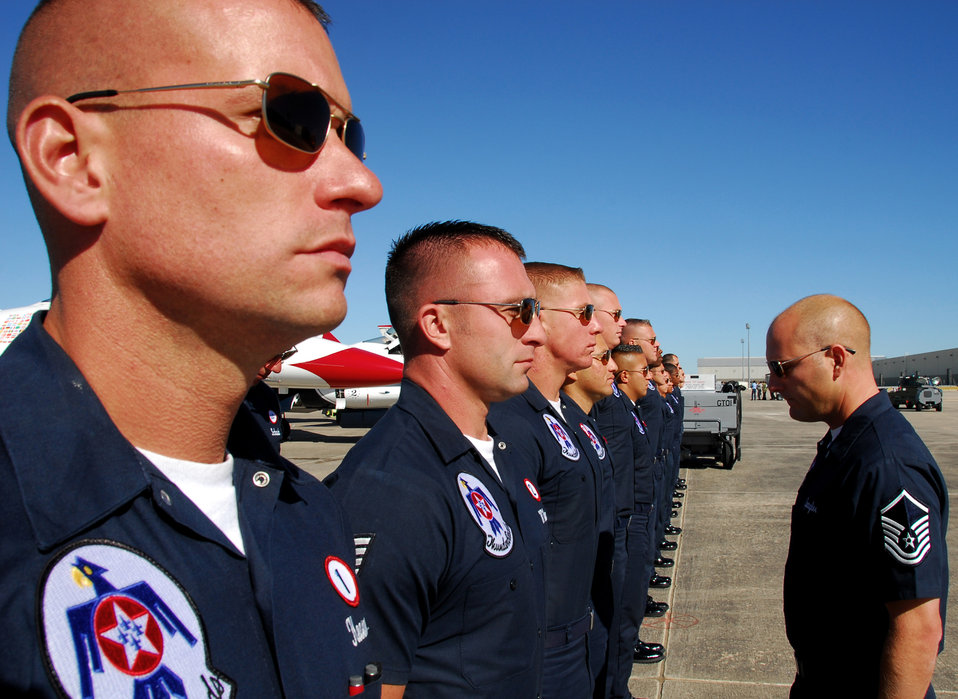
Thunderbirds maintainers keep show running behind the scenes

Before starting their aircraft pre-inspections Nov. 5, 2010, for an air show taking place Nov. 6 and 7 at Lackland Air Force Base, Texas, Air Force Thunderbird maintainers are inspected during open ranks. The Thunderbirds team is made up of 12 officers and more than 120 enlisted maintenance and support Airmen.